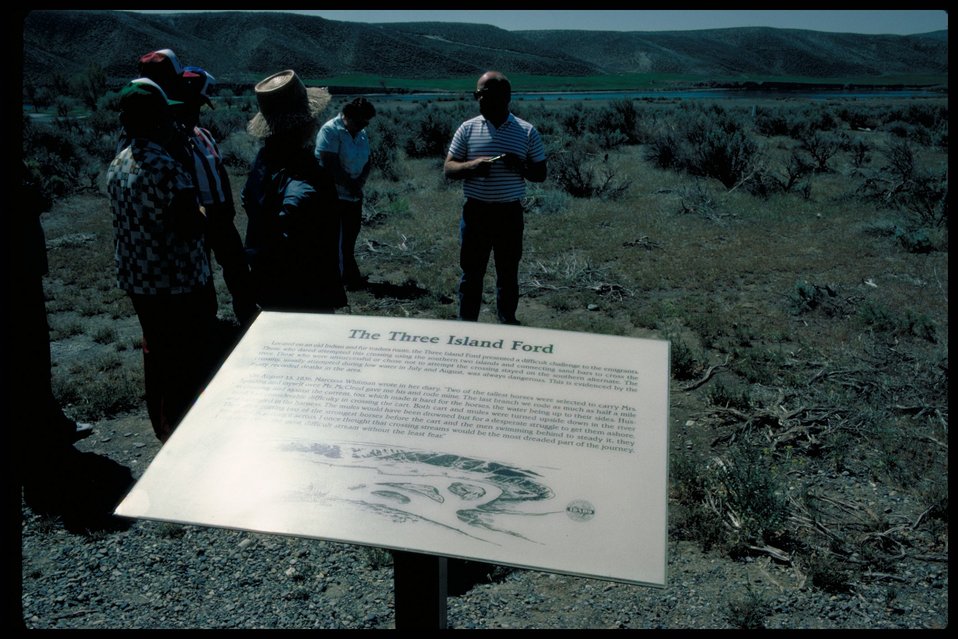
Three Island Park Oregon Trail Lower Snake River District